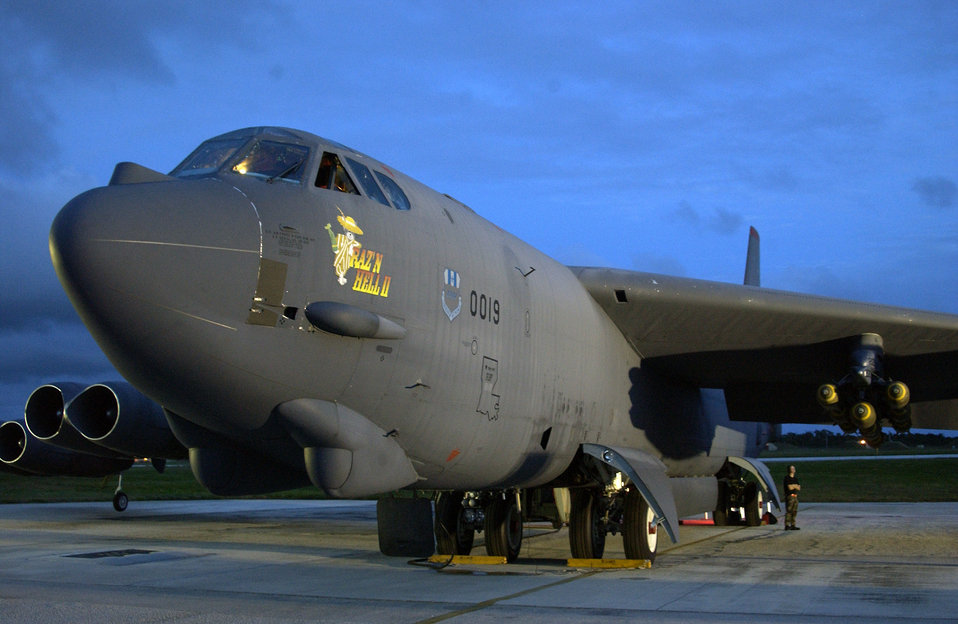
36th OG reactivates to meet Pacific theatre mission

A B-52 Stratofortress deployed to Andersen Air Force Base, Guam, departs Feb. 12 for a training mission over the Pacific Ocean. The bombers deployed from the 2nd Bomb Wing at Barksdale AFB, La., are part of the 36th Operations Group that reactivated this week to provide a continuous bomber presence in the Asia-Pacific region.